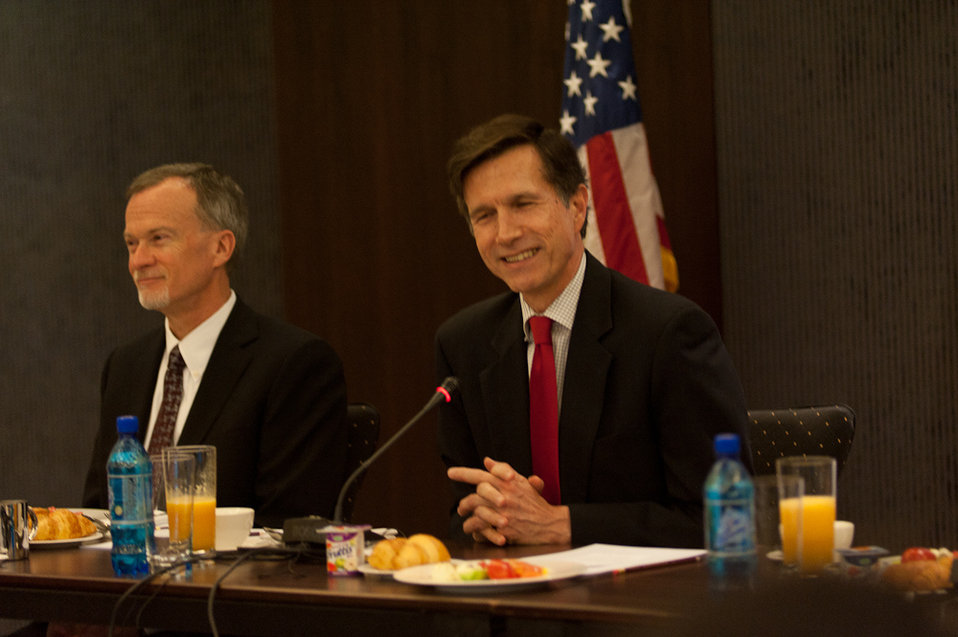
Assistant Secretary Blake Leads U.S. Government-Interagency Delegation to U.S.-Tajikistan Annual BIlateral Consultations

U.S. Assistant Secretary of State for South and Central Asian Affairs, Robert O. Blake, Jr. leads the U.S. government-interagency delegation to the second U.S. - Tajikistan Annual Bilateral Consultations in Dushanbe, Tajikistan, April 11 - 12, 2011. [Damian Wampler/ State Department photo/ Public Domain]